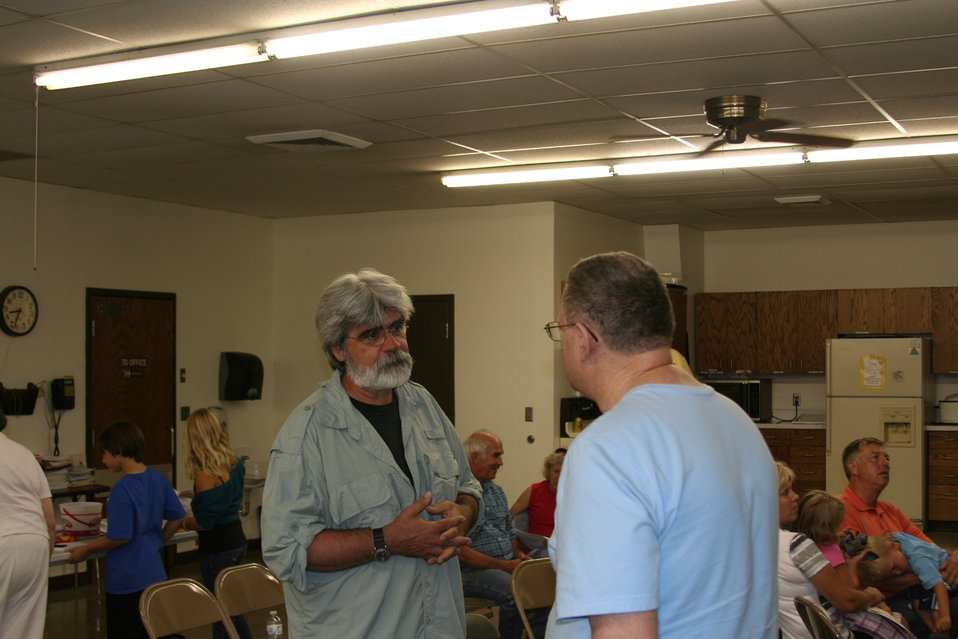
Creatures of the Night 2011